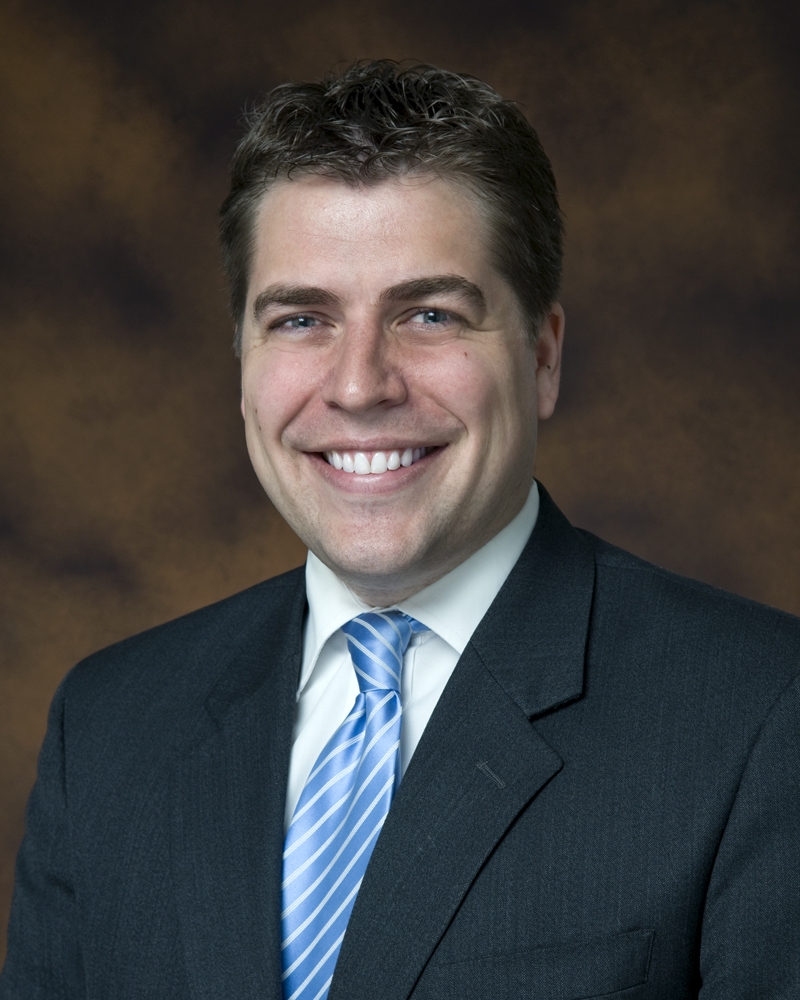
ARPA-E Deputy Director for Operations Shane Kosinski